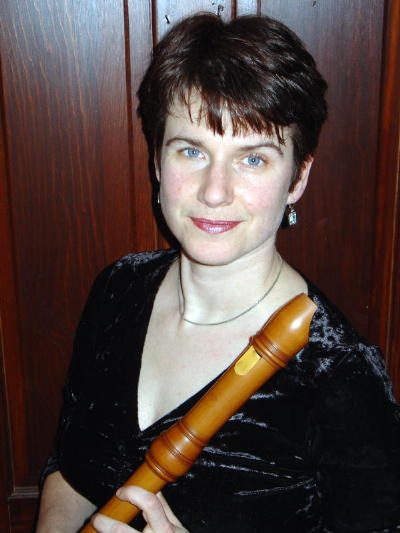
source: Rachel Begley